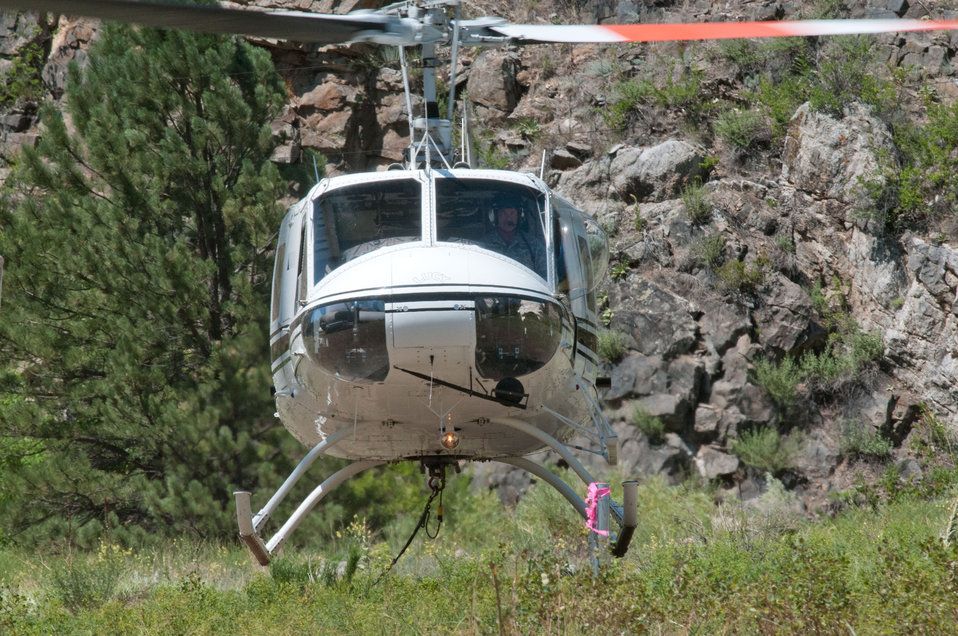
Mountain West Helicopter pilot Randy Mason takes off in a Bell UH-1H after being refueled at the Seaman Reservoir spillway, near Fort Collins, Colo., on Friday, July 20, 2012. In the foreground is an aerial seed spreader, used in the continuing aerial application of straw and seed mix to mitigate soil and ash runoff from the mountainous terrain leading to Seaman Reservoir, drinking water resource for the City of Greeley. The 100-150-foot cable below it holds and releases loads of certified straw weighing 1,400 – 2,000 pounds. Forest service lands received straw, while private and other lands receive a seed mix and straw to promote ground cover plant growth on ash-covered lands. In total, 1,800 tons of straw will be applied during the 14-day operation. One quarter of the cost was paid by the City of Greeley and the U.S. Department of Agriculture funded the remainder. The Hewlett Gulch Fire was started by a camper’s alcohol stove, on May 14, at the saddle of a picturesque mountain ridge along the Hewlett Gulch Trail of Poudre Canyon, in the Roosevelt National Forest, 60 miles north of Denver. At it’s peak more than 400 firefighters were battling fires being pushed by 50 mph winds that helped blacken over 12-square-miles of dry ground cover, brush and trees. Many of the trees were already dead and tinder dry from beetle-kill. Their efforts have successfully kept water in the reservoir clean and clear, while downstream water flow has gone from famous Colorado clear water to nearly black flows of water heavily laden with ash, silt, and burnt debris that recent thunderstorms have already washed down from the mountainsides.